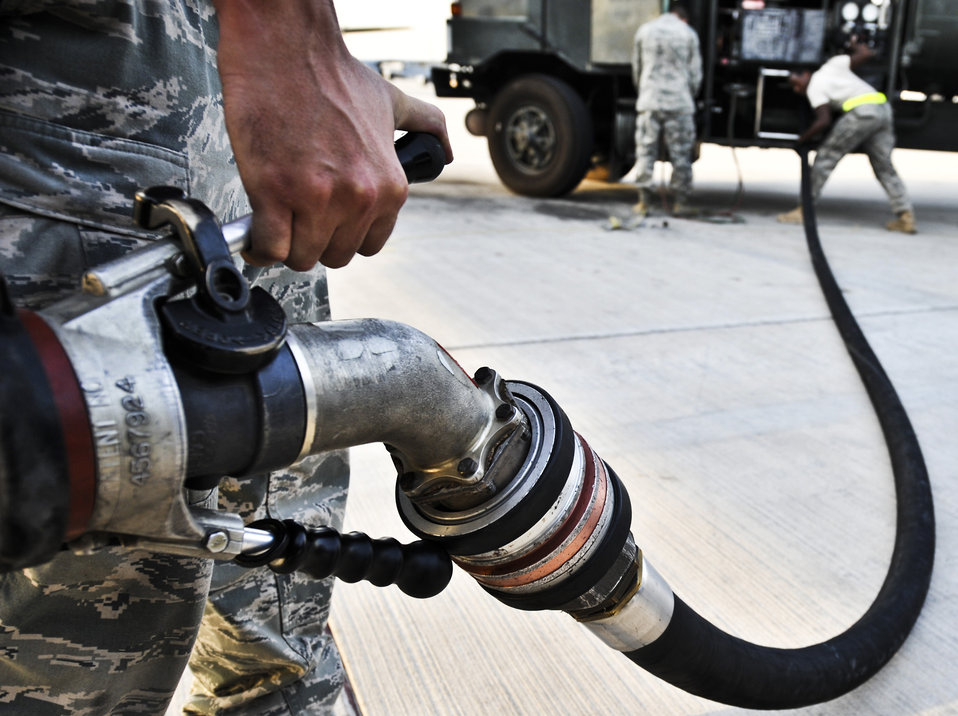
Fueling the fight

Airmen from the 340th Expeditionary Aircraft Maintenance Unit and 379th Expeditionary Logistics Readiness Squadron retract a refueling hose July 31, 2011, in Southwest Asia.